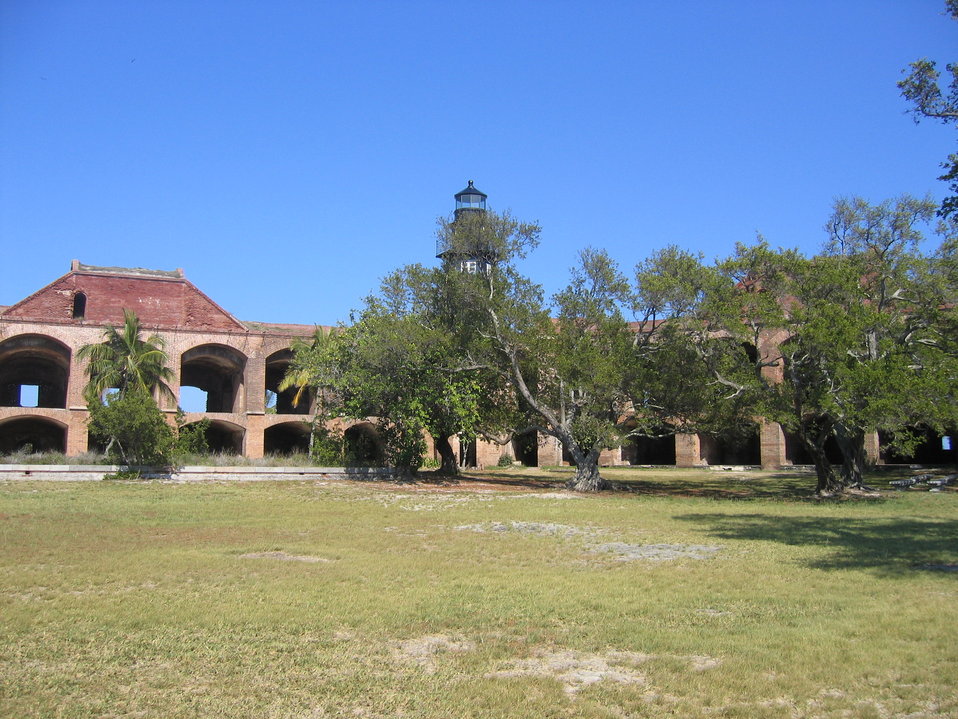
On the Fort Jefferson parade ground.